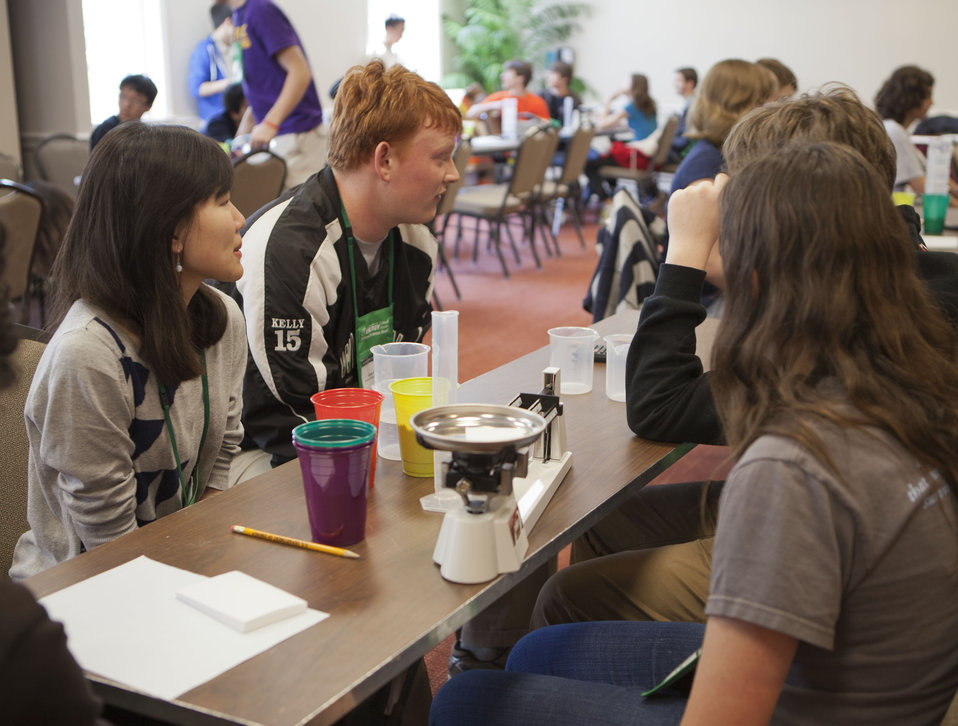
National Science Bowl 2013

The high school students participated in a team challenge competition, which prompted them to solve problems by conducting experiments and collecting data.